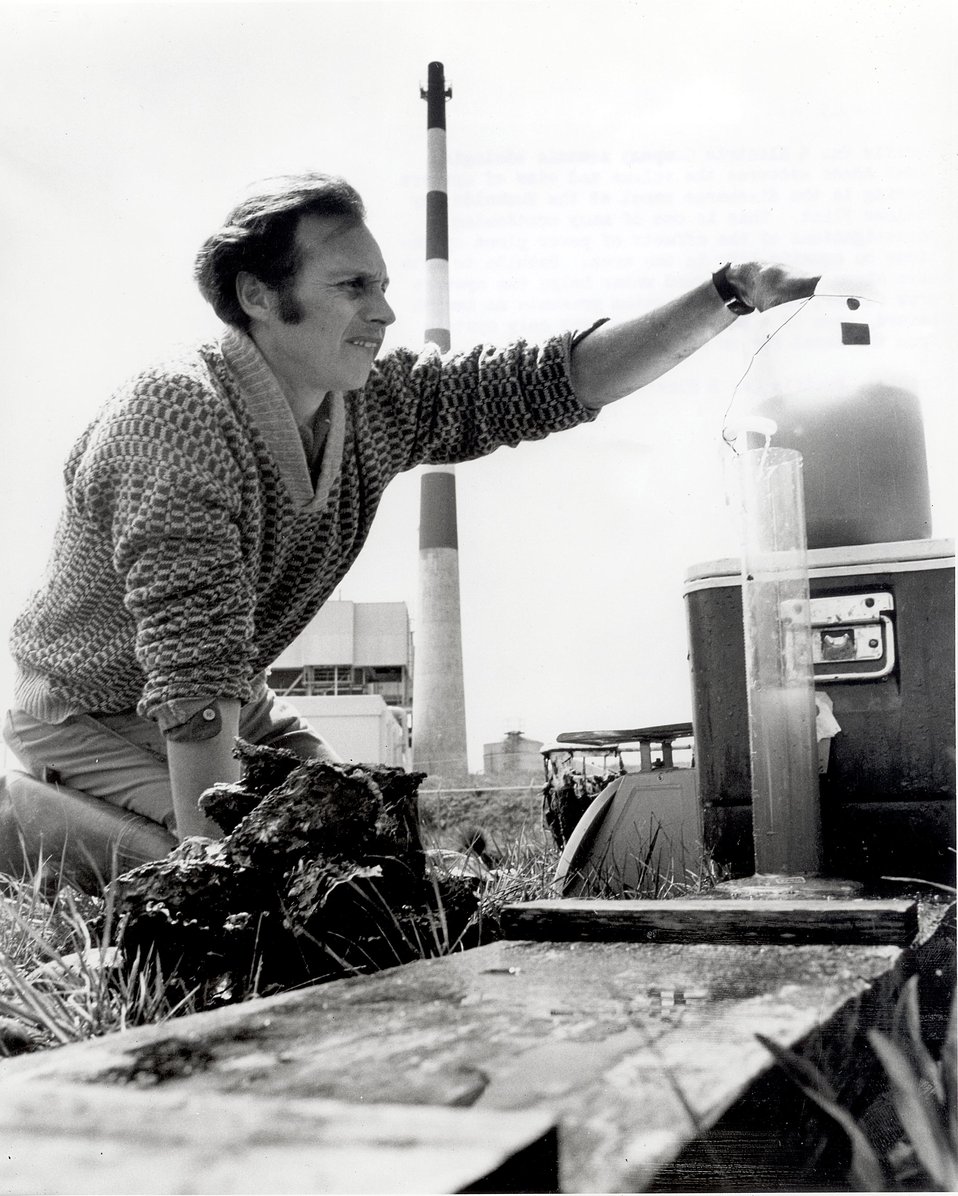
Pacific Gas and Electric Company's aquatic biologist James Adams measures the volume and size of oysters growing in the discharge canal at the Humbolt Bay Nuclear Plant.